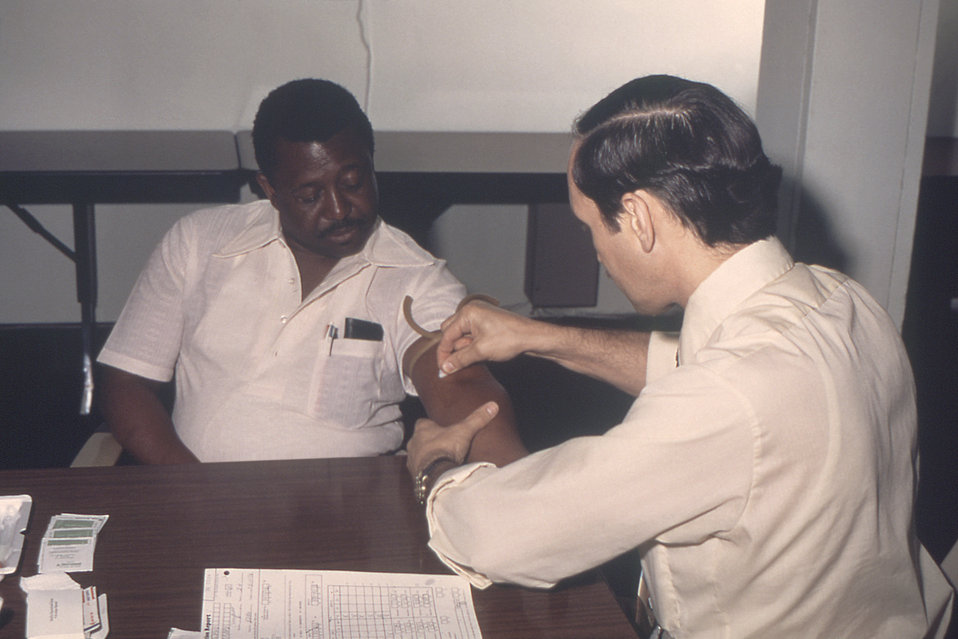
From 1976, this photograph depicted Dr. Gary Noble as he was preparing to draw blood from a male patient that would be tested for its concentration of influenza antibodies. This image was captured during the National A/New Jersey/76 Influenza Study Program.